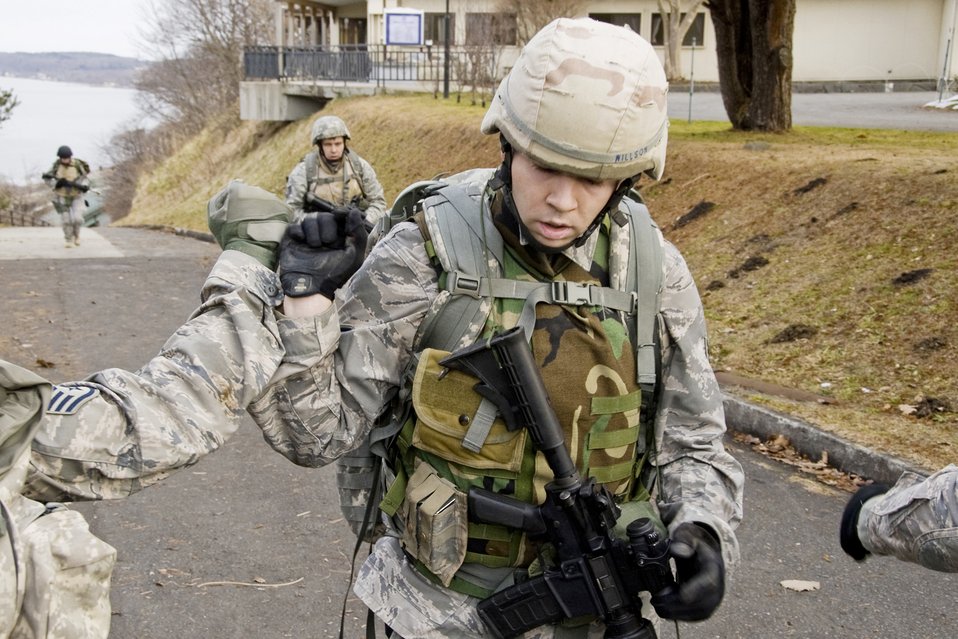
Misawa EOD unit keeps physically fit

Staff Sgt. Paul Willson, an explosive ordinance disposal technician with the 35th Civil Engineer Squadron, completes a four-mile ruck march Jan. 8, 2010, at Misawa Air Base, Japan. Including a rucksack, body armor, helmet and weapon, members of the EOD flight carried more than 100 pounds of gear during the march.